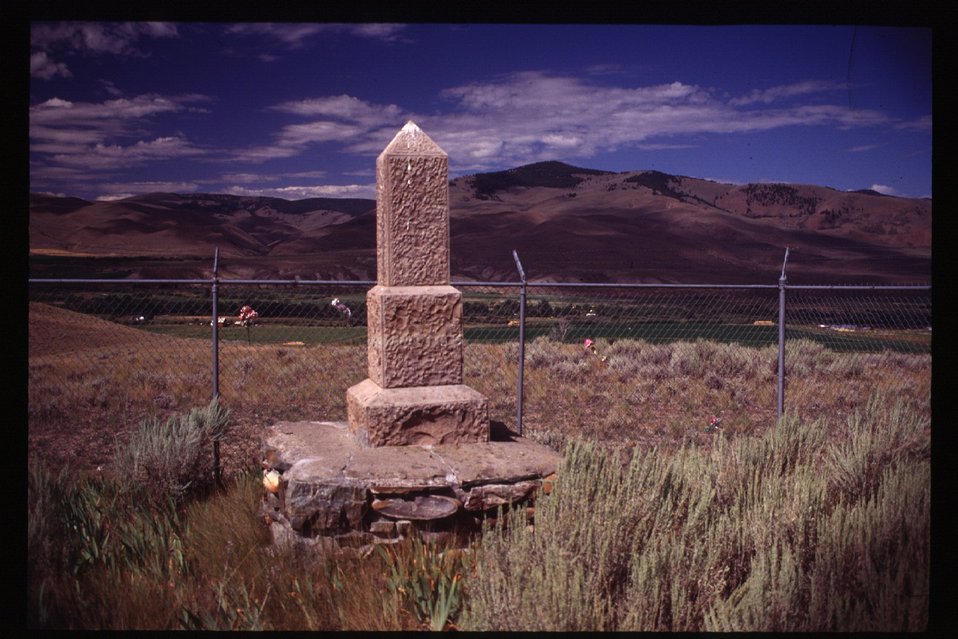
Chief Tendoy Monument Lewis and Clark National Historic Trail Salmon Field Office UCSC Upper Columbia Salmon Clearwater